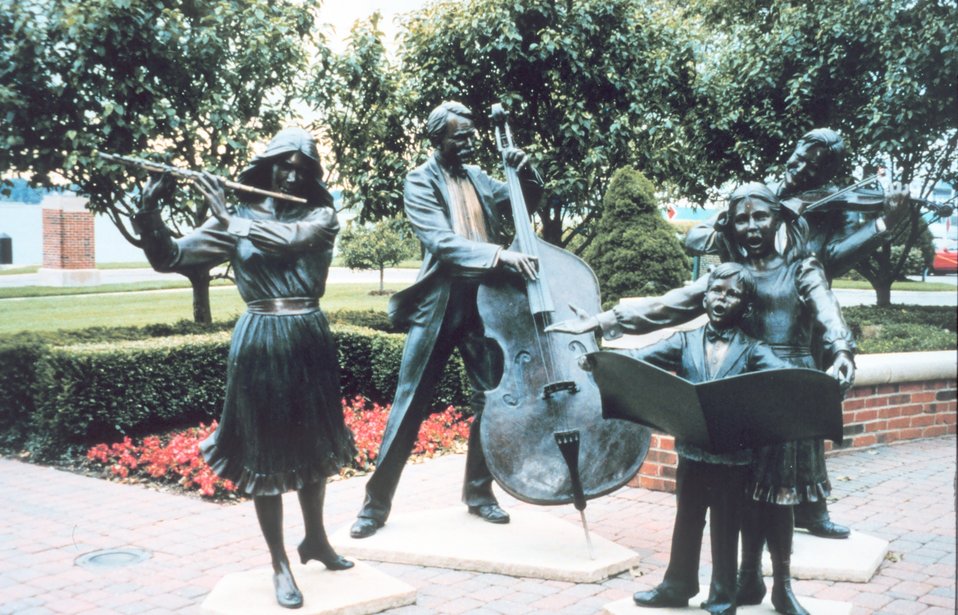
Park along Detroit River